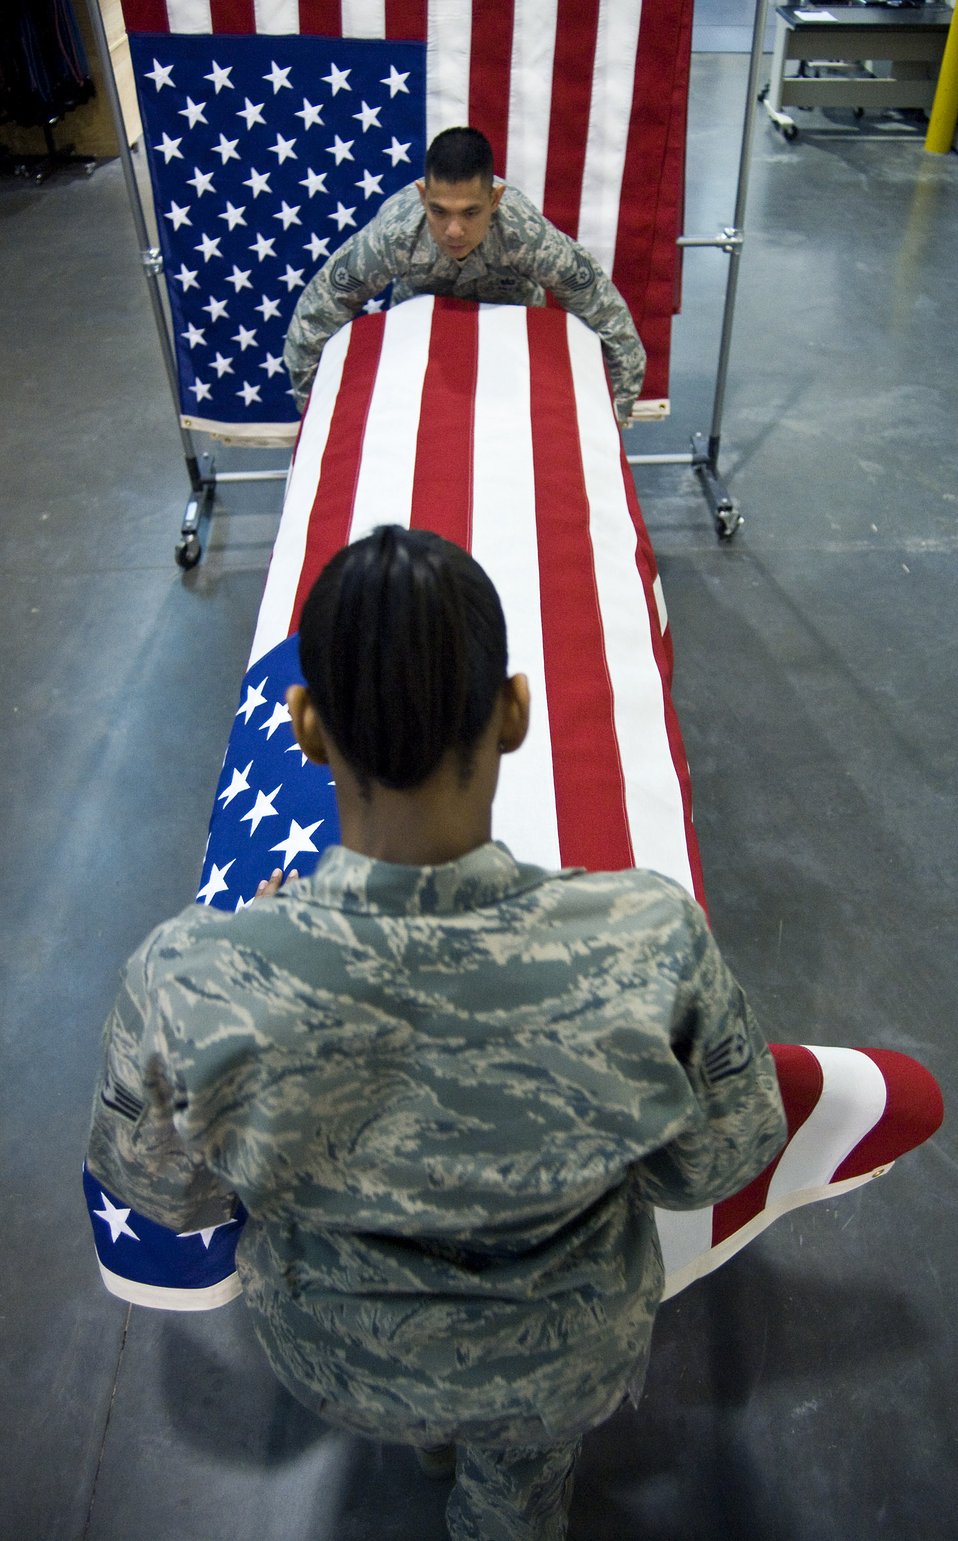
Dignified Transfer of Remains

Shipping Specialists Staff Sgt. Star Samuels (front) and Tech. Sgt. Willard Rico place a U.S. flag over a casket March 31 during a dry run of shipping process procedures for the dignified transfer of remains at the Charles C. Carson Center for Mortuary Affairs, Dover Air Force Base, Del. The center is the Defense Department's largest joint-service mortuary facility and the only one in the continental United States. Sergeant Samuels is deployed from the 43rd Force Support Squadron at Pope AFB, N.C. Sergeant Rico is deployed from the 60th FSS, Travis AFB, Calif.